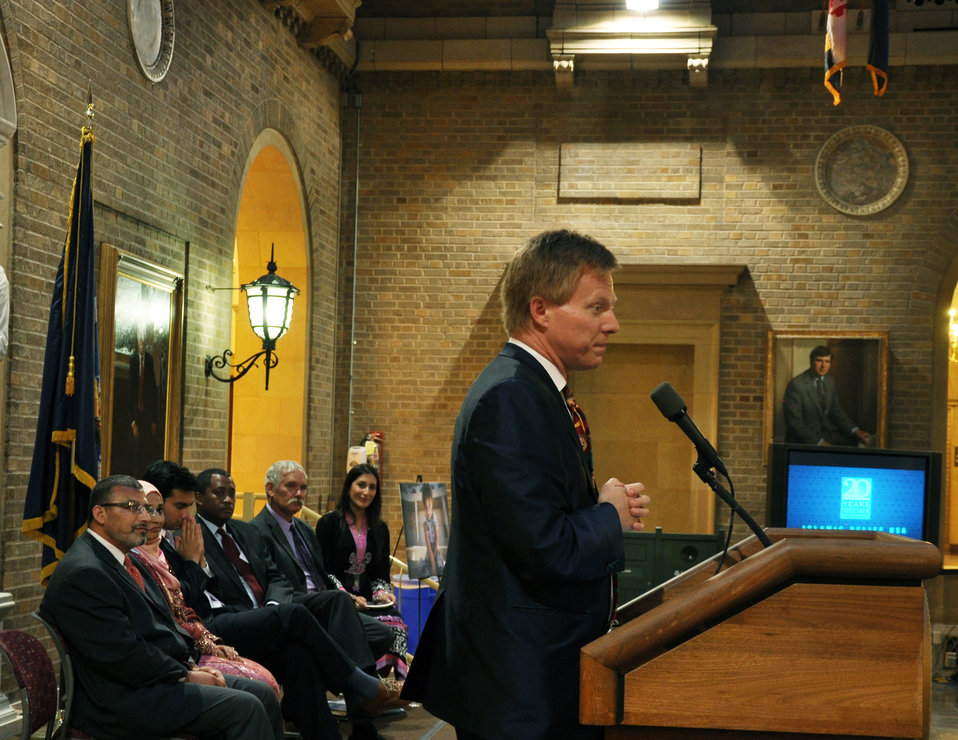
U.S. Department of Agriculture (USDA) StrikeForce Initiative Director Max Finberg emcees the USDA's fifth annual Ramadan dinner onthe USDA Whitten Building patio on Thursday, Aug. 1, 2013. For the second year in a row, Islamic Relief USA had the privilege of sponsoring the event’s dinner. Islamic Relief USA works with the USDA as well as numerous other organizations to help alleviate hunger. In one joint initiative with the USDA, IRUSA helps support community organizations across America that provide summer meals to low-income youth who rely on free or reduced-cost school lunches during the school year.